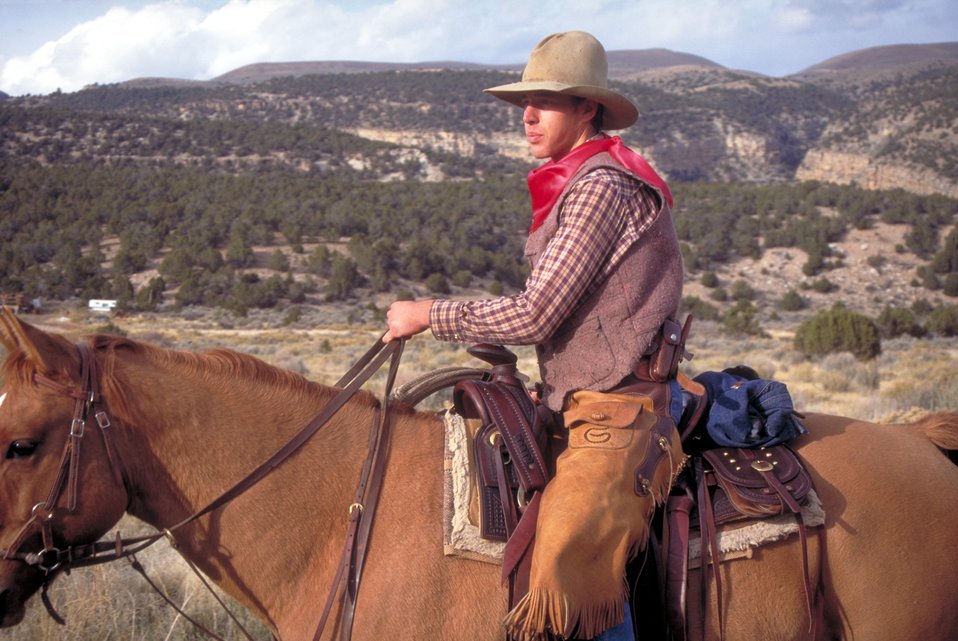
Working cowboys living near Vernal, Utah.